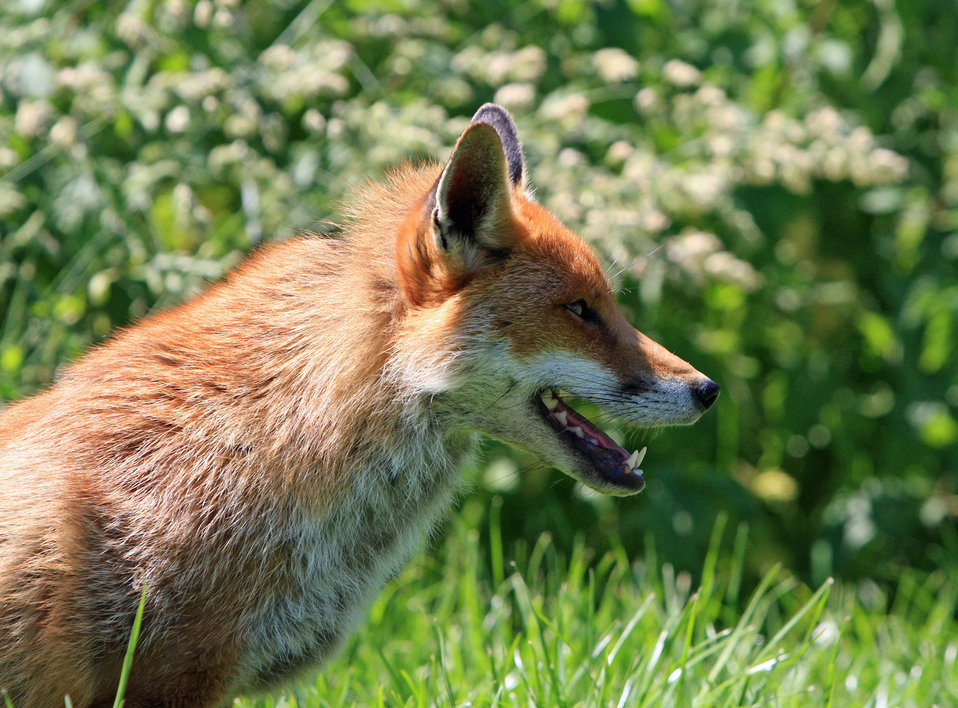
Fox portrait

Portrait of a red fox close-up.